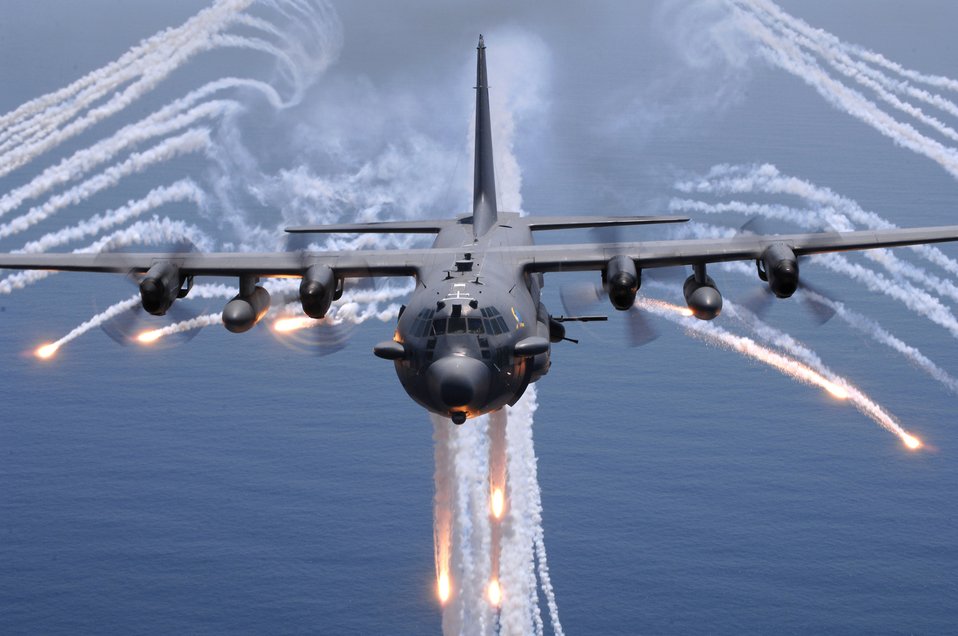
Training with flare

An AC-130H Gunship aircraft from the 16th Special Operations Squadron out of Hurlburt Field, Fla., jettisons flares as an infrared countermeasure during multigunship formation egress training Aug. 24.